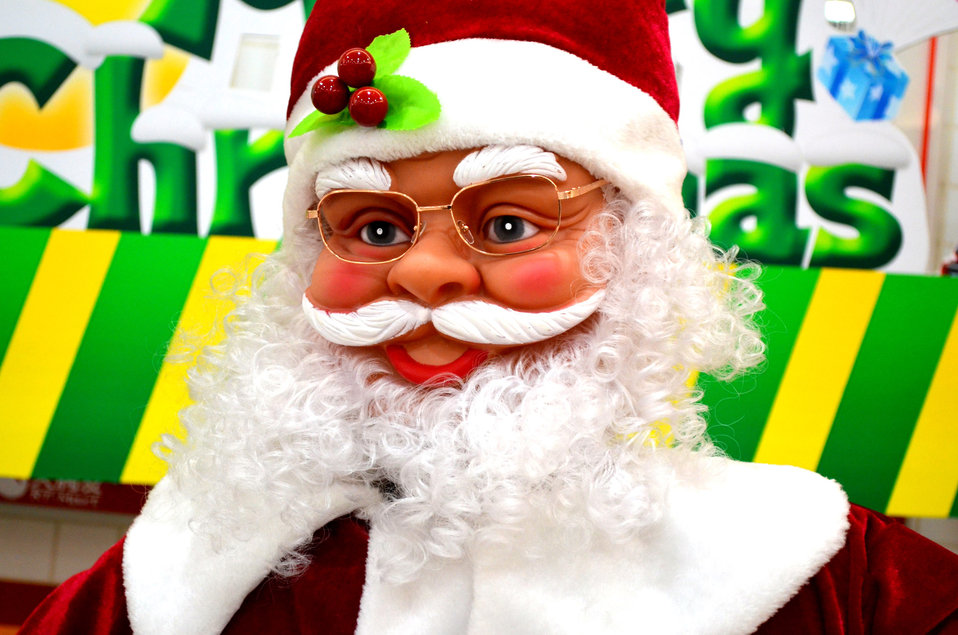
Santa claus face.